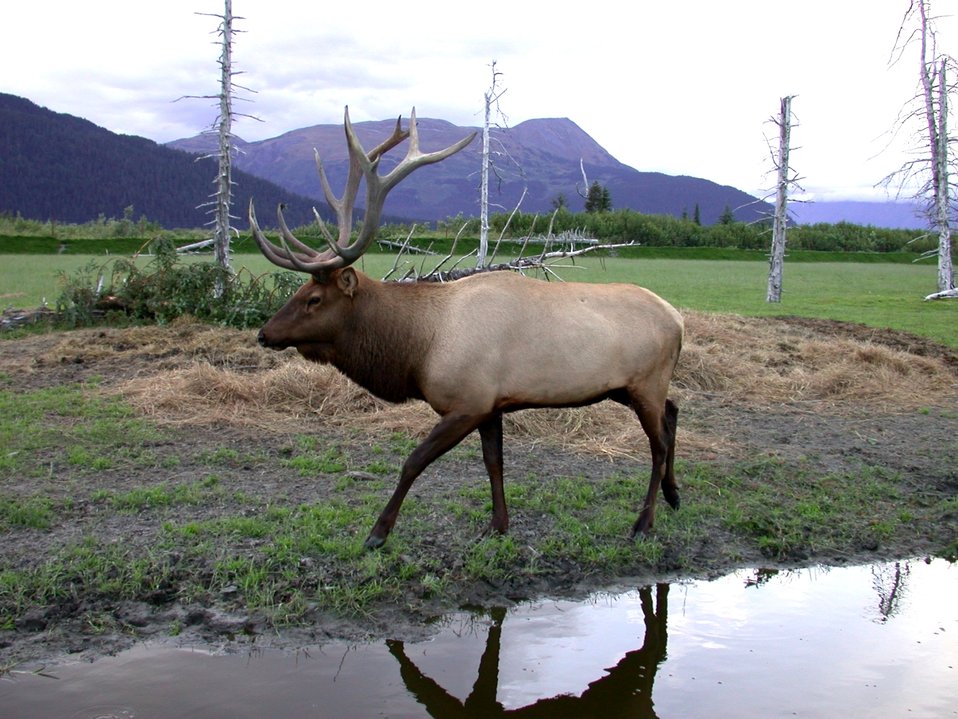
An elk on a game preserve.